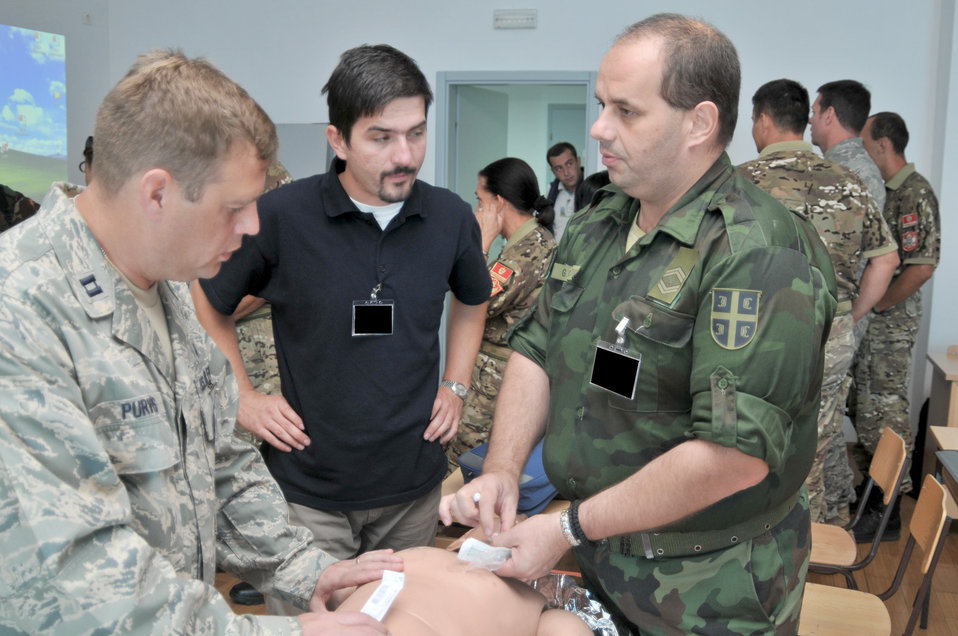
MEDCURE '10

Capt. Charles Purvis, (left) discusses treatment Sept. 14, 2010 for a collapsed lung with Marko Saric, a physician's assistant from Bosnia and Herzegovina and Serbian army Warrant Officer Goran Gavrilovic at Medical Training Exercise in Central & Eastern Europe 2010 held at Danilovgrad Army Base, Montenegro. Captain Purvis is a critical care nurse from the 48th Medical Operations Squadron at RAF Lakenheath England.